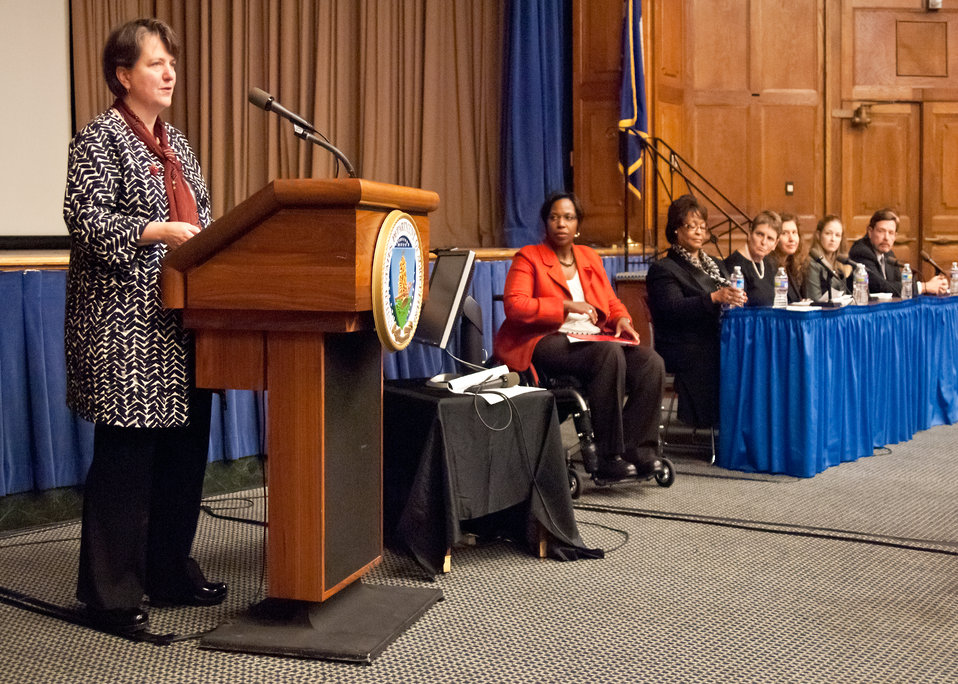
Deputy Secretary of Agriculture Kathleen Merrigan, addresses U.S. Department of Agriculture employees during National Disability Employment Awareness Month event in Washington, DC, on Wednesday, October 5, 2011. To Dr. Merrigan’s left are: Carmen Jones, Senior Advisor, Departmental Management the moderator of the USDA Panel of Success: Hiring and Employing Individuals with Disabilities and panel members Elaine Jones, Food and Nutrition Service, Robin Heard, Deputy Assistant Secretary for Administration, Francesca Yabraian, Office of the Deputy Assistant Secretary for Administration, Gari Jo Green, Office of Inspector General, Richard Swenson, Departmental Management, William Bethel, National Institute of Food and Agriculture. Dr. Merrigan and Agriculture Secretary Tom Vilsack are dedicated to establishing the USDA as the lead Federal agency in employing individuals with disabilities. The theme for the event is “Profit by Investing in Workers with Disabilities.” USDA is committed to ensuring that all our programs are accessible and inclusive of individuals with disabilities.